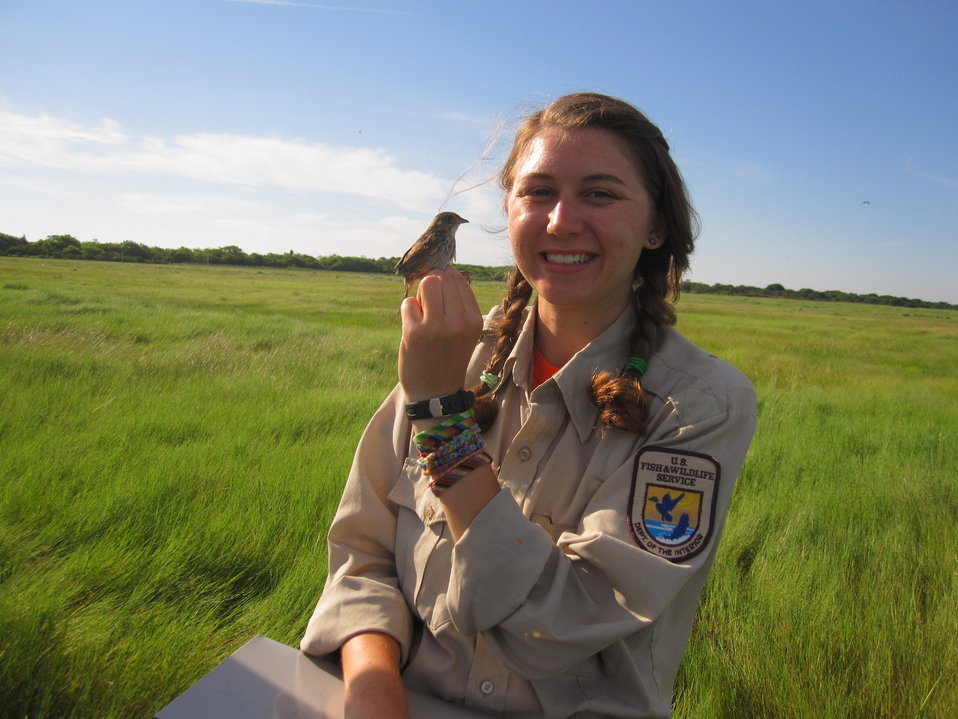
Claire Revekant

U.S. Fish and Wildlife Service